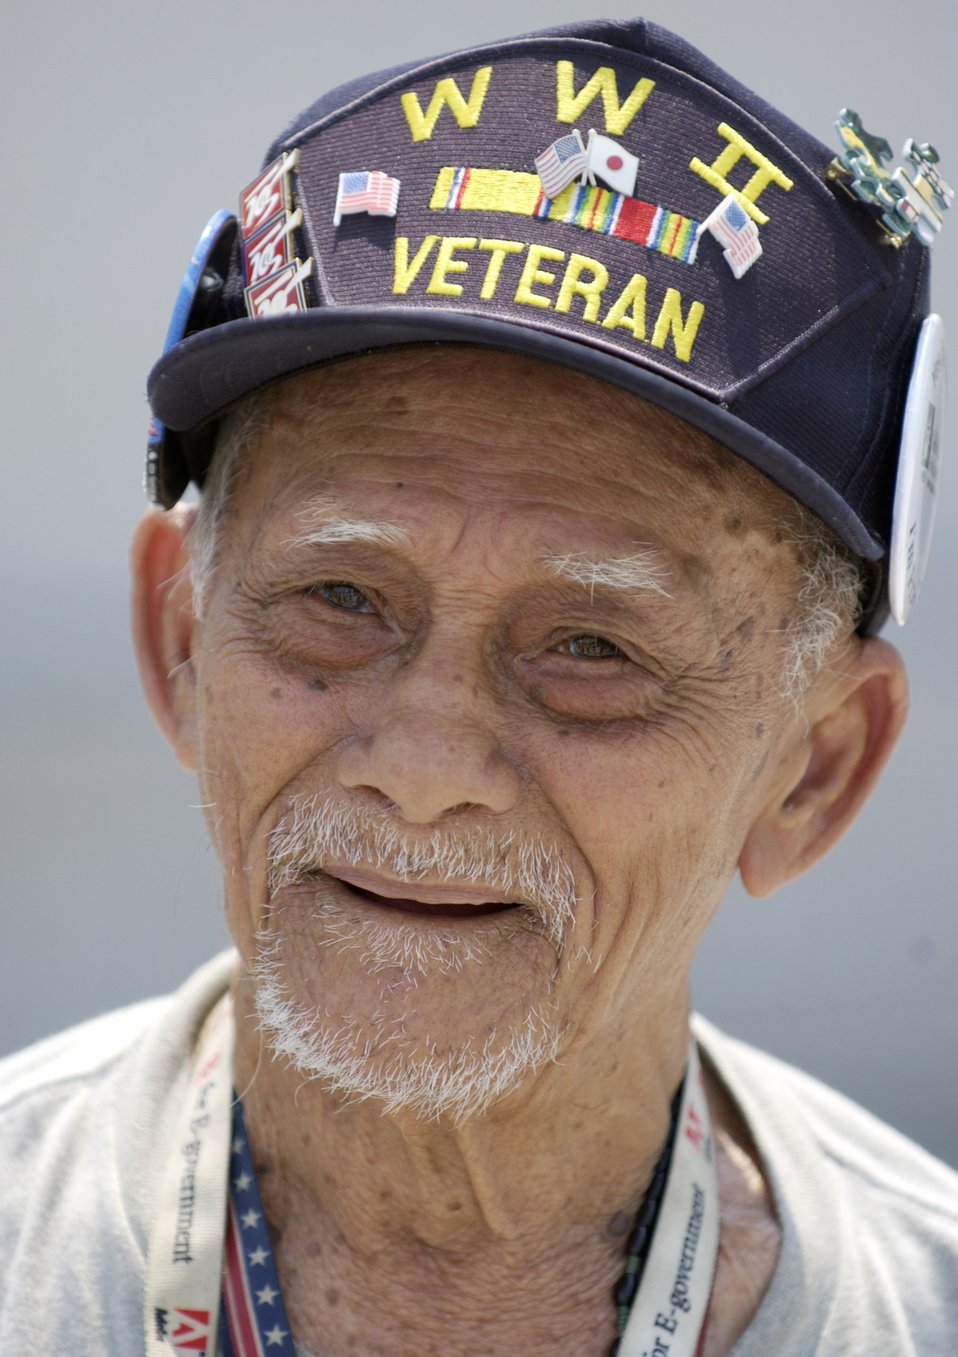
Veteran

WASHINGTON D.C. - A World War II veteran living at the Armed Forces Retirement Home here visits the World War II memorial. The memorial was officially dedicated on Memorial Day weekend.